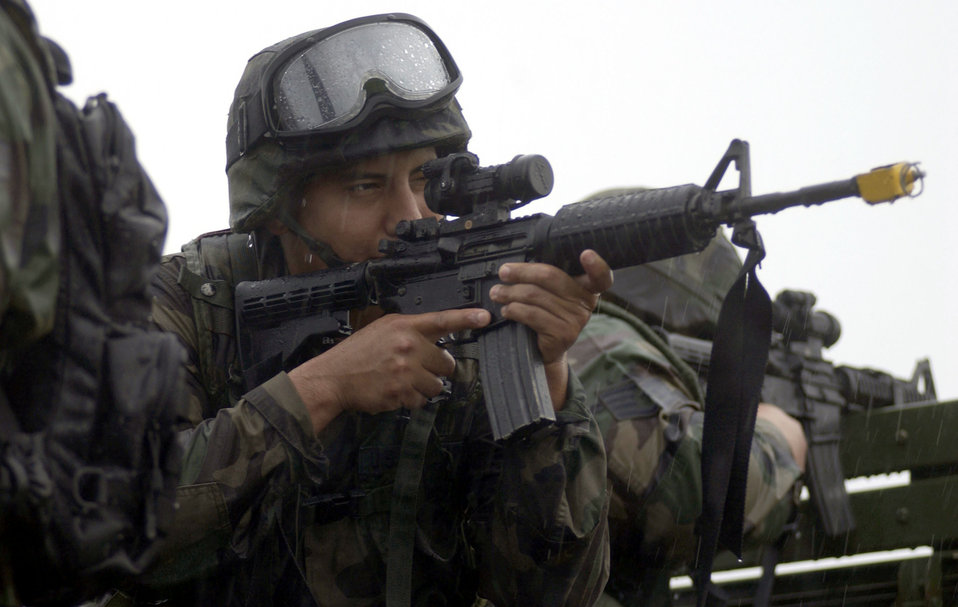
Rain won't hurt ya

ANDERSEN AIR FORCE BASE, Guam -- Senior Airman Elias Guereca provides rear security in the rain during a convoy training exercise here Sept. 7. He is assigned to the 613th Security Forces Squadron.